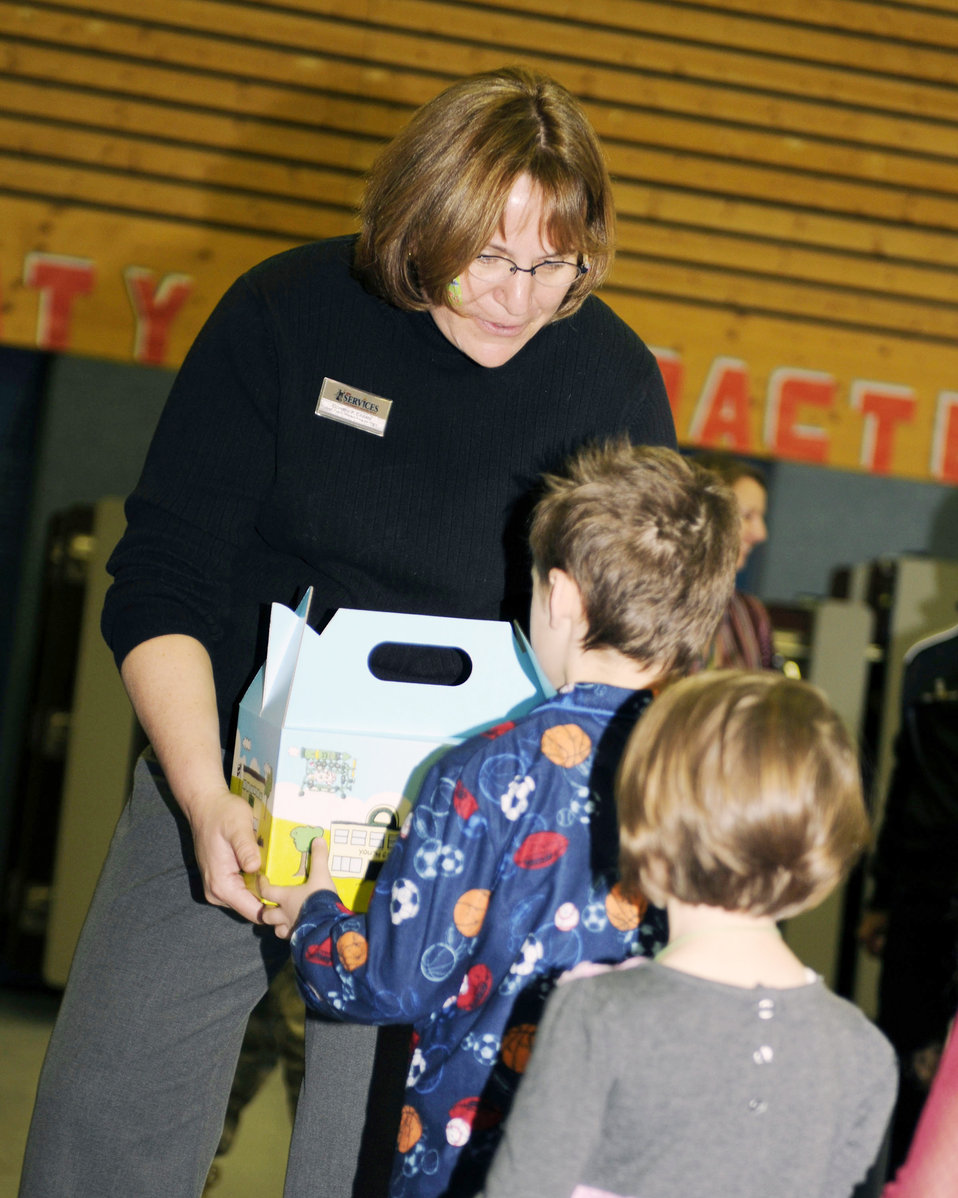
Kits help children cope with deployments

Dorothy Choate hands out Cuzzie Cares Deployment Kits at Ramstein Elementary School Dec. 17, 2009, at Ramstein Air Base, Germany. Cuzzie, designed by Trevor Romain, is an inventive bear that creates flying machines with the help of his ground crew and is the centerpiece of a new kit designed to comfort school-age children during deployments. Ms. Choate is the 86th Services Squadron family member program flight chief.